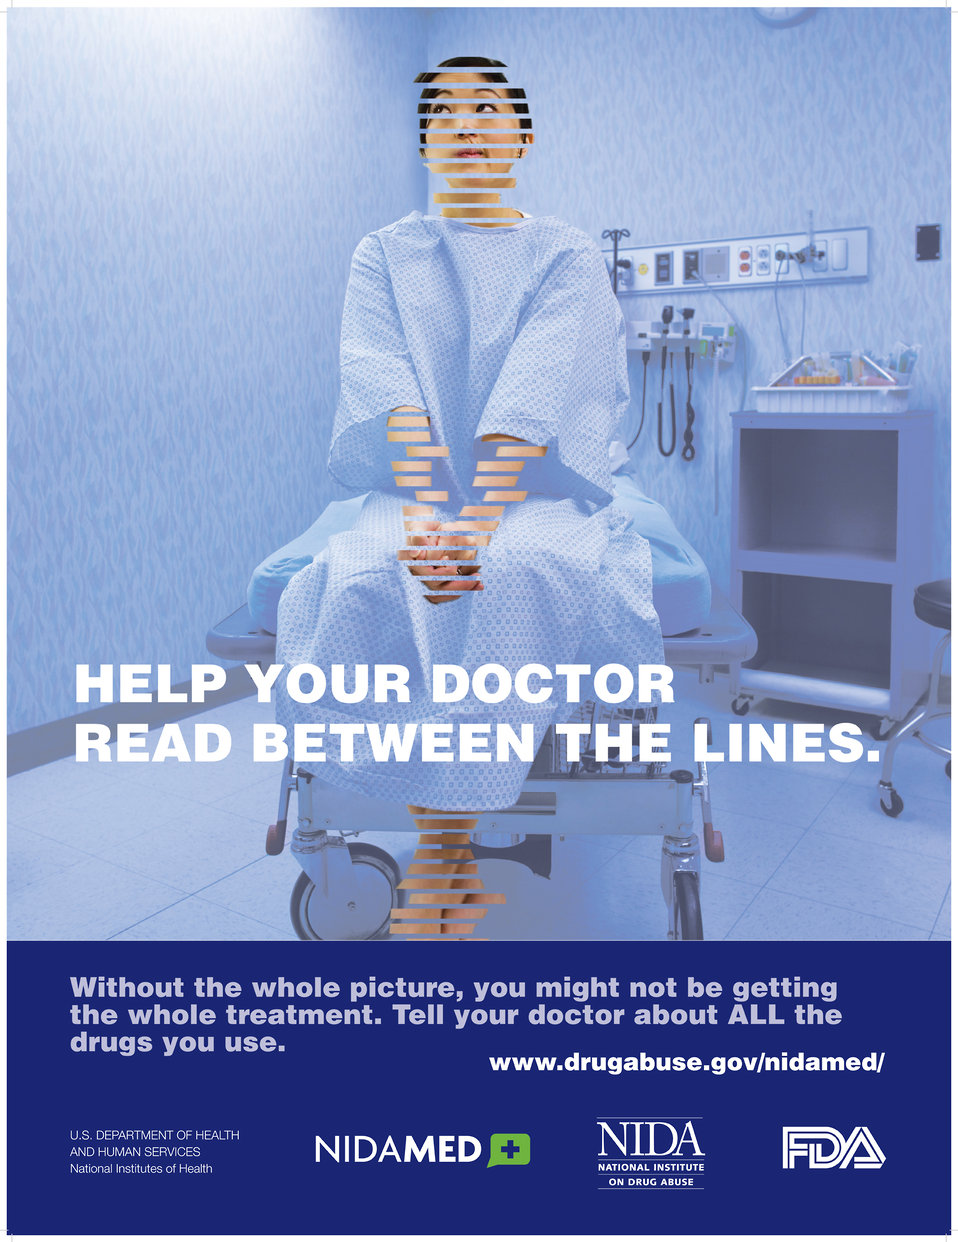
NIDAMED poster